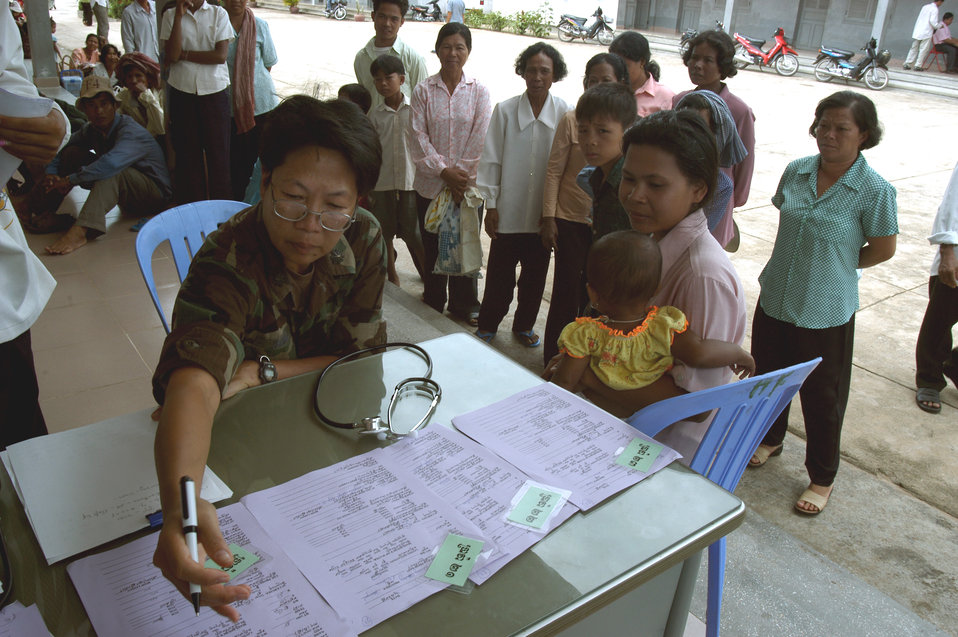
Medics assist in Cambodia

KEP, Cambodia -- Lt. Col. Diep Duong reviews a patient's screening paperwork as she assesses possible patients in a hospital compound here. Colonel Duong is the leader of a 20-person blast resuscitation and victim assistance team on a two-week humanitarian mission here. Colonel Duong is a nurse assigned to Detachment 2 of the 13th Air Force international health specialist program at Hickam Air Force Base, Hawaii.